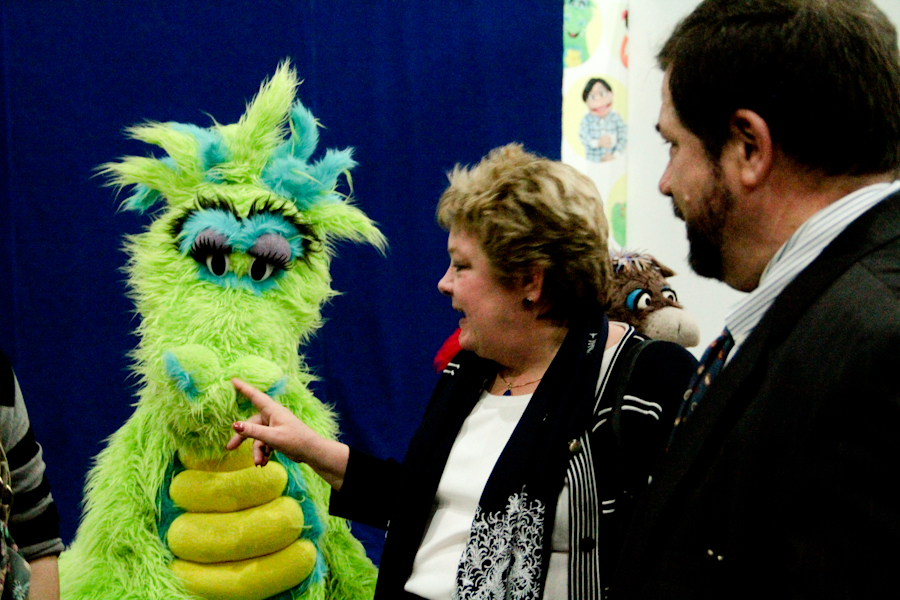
Sim Sim Hamara

Lahore, February 20, 2012 - Deputy Director of the USAID Mission in Pakistan Karen Freeman and Director of the Pakistan Desk at the USAID headquarters in Washington, Jeffrey Bakken visit the Sim Sim Hamara Film Studio in Lahore.